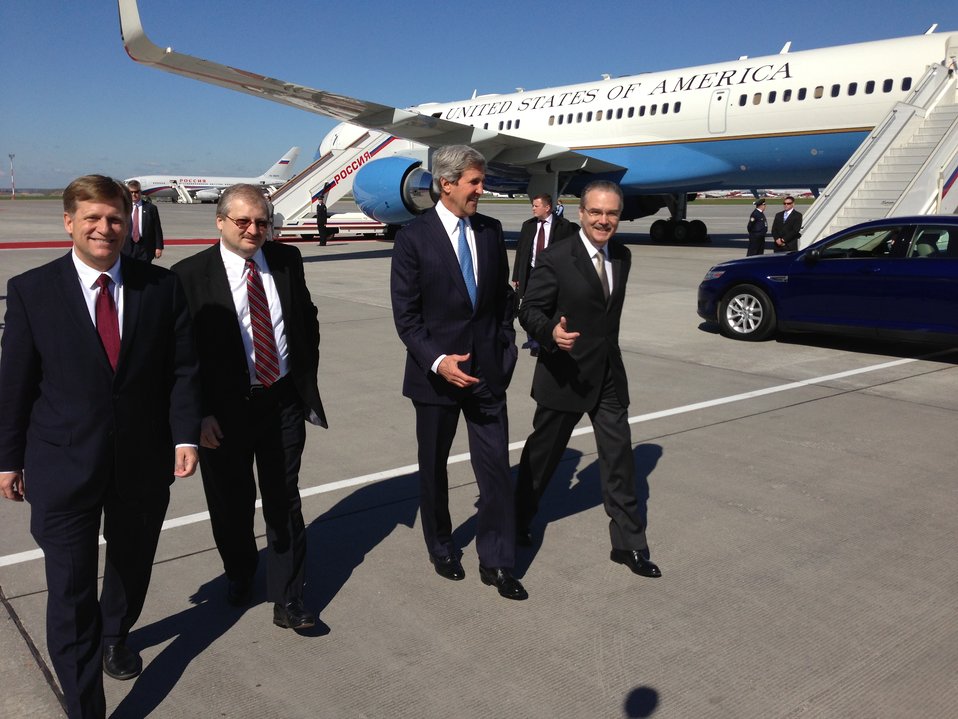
Secretary Kerry Arrives in Moscow

U.S. Secretary of State John Kerry walks with Director of the Russian Foreign Ministry North America Department Aleksandr Drachiyev, second from left, Director of the Russian Ministry of Foreign Affairs Protocol Department Yuriy Filatov, right, and U.S. Ambassador to Russia, Michael McFaul, far left, after his plane landed in Moscow ahead of meetings with Russian President Vladimir Putin and Russian Foreign Minister Sergey Lavrov on May 7, 2013.